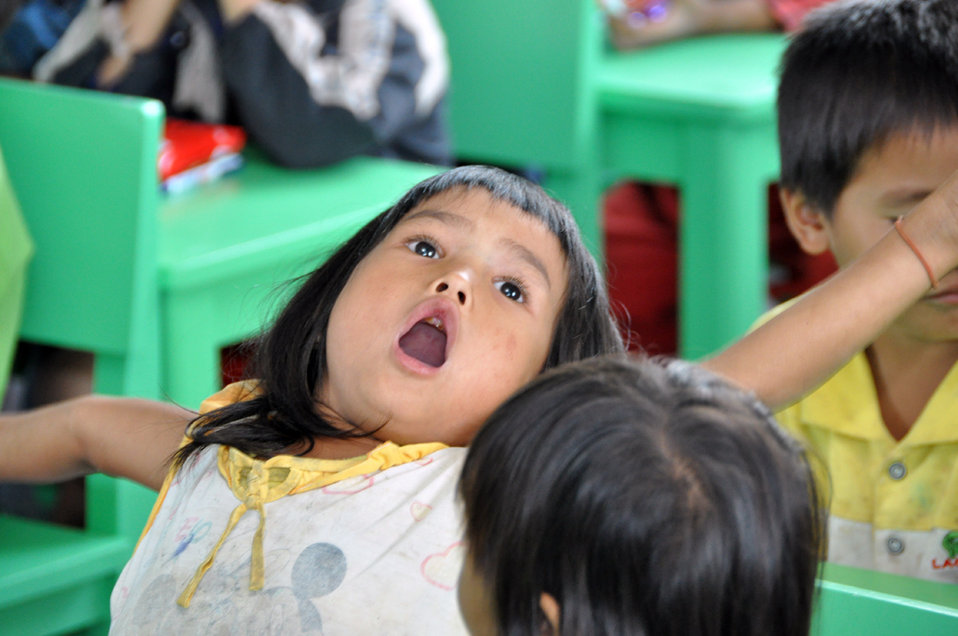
USAID contributes to refurbished pre-schools and teacher training in Vietnam